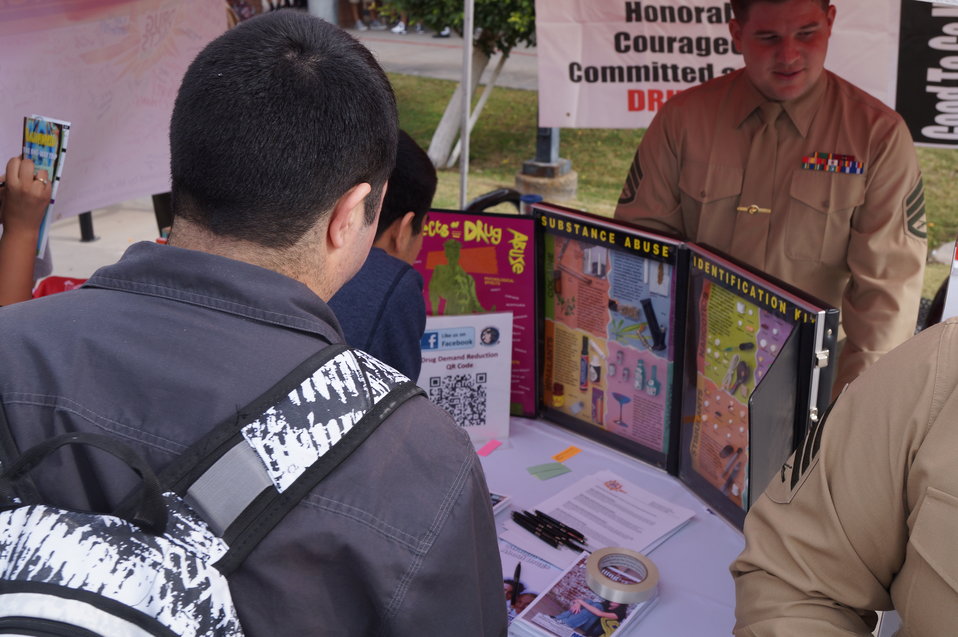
Nationa Drug Facts Week - CIBOLA HS

The Drug Demand Reduction Program out of Yuma, Arizona held numerous events at local schools to support NIDA's National Drug Facts Week, Jan. 27-Feb. 2 2014. Teens participated in drug awareness games, and helped to Shatter the Myths about teen substance abuse.